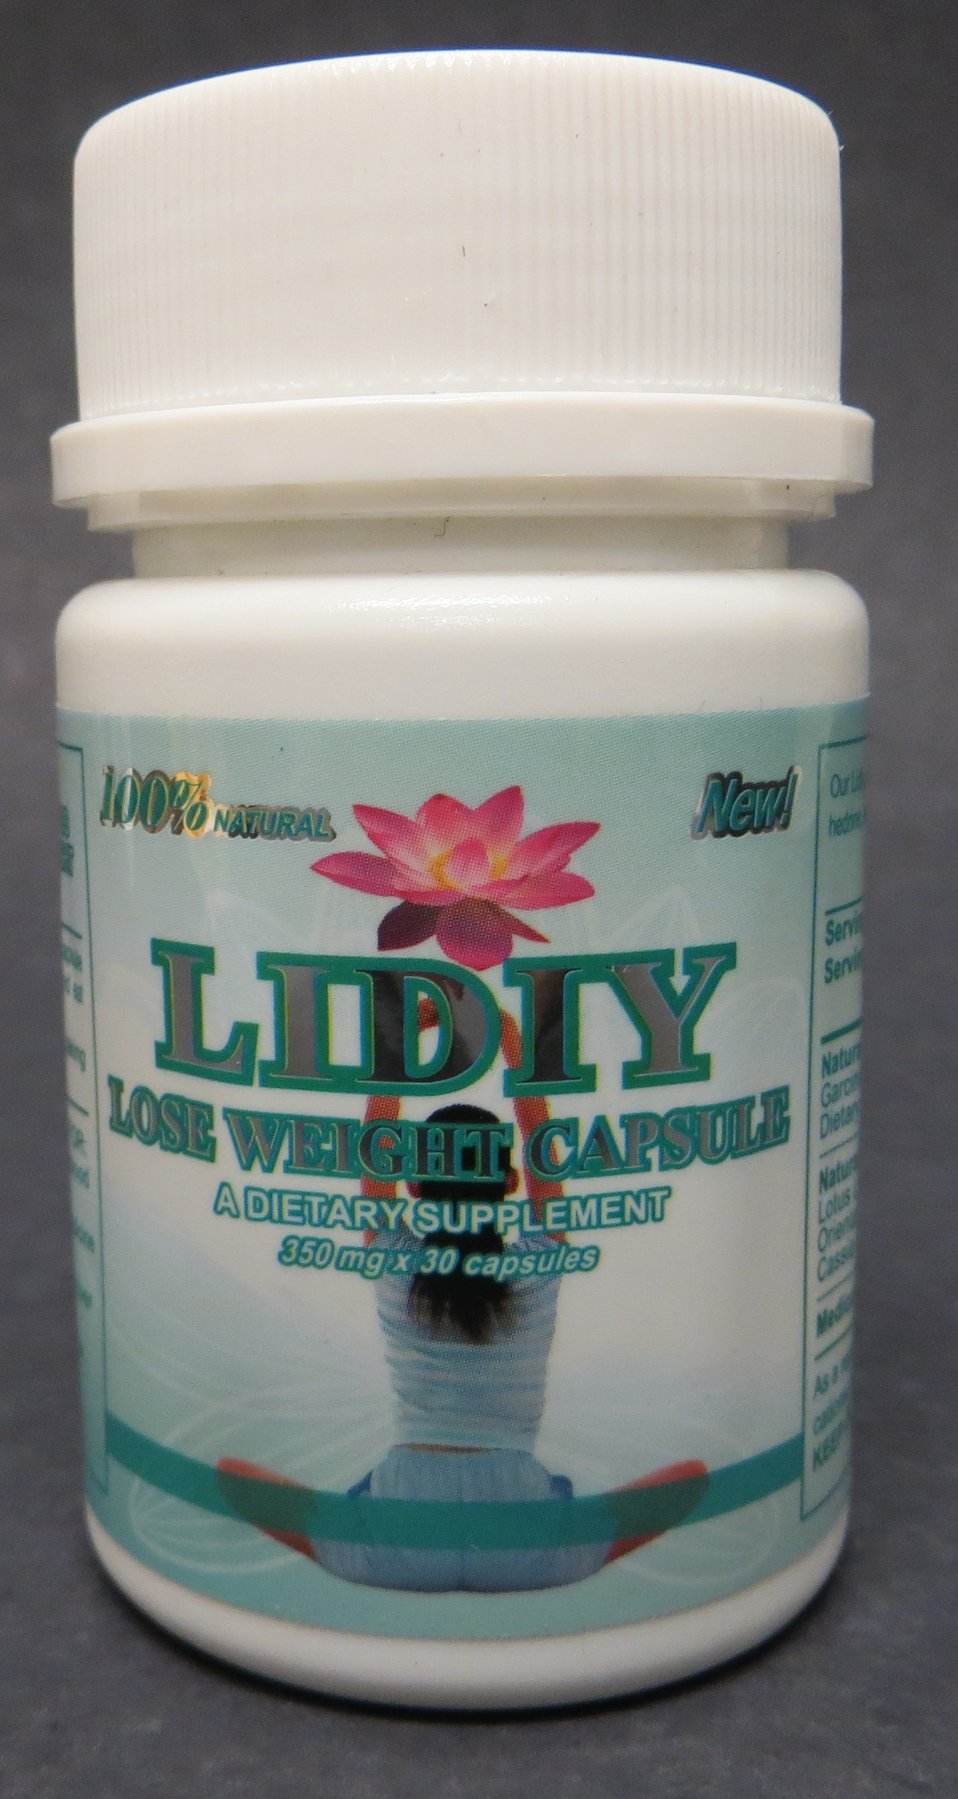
Lidiy

October 7, 2013 - The FDA is advising consumers not to purchase or use 'Lidiy,' a product promoted and sold for weight loss. The product was found to contain undeclared sibutramine. For more information, go to www.fda.gov/safety/recalls/ucm370884.htm

And read this Consumer Update: Beware of Fraudulent ‘Dietary Supplements’